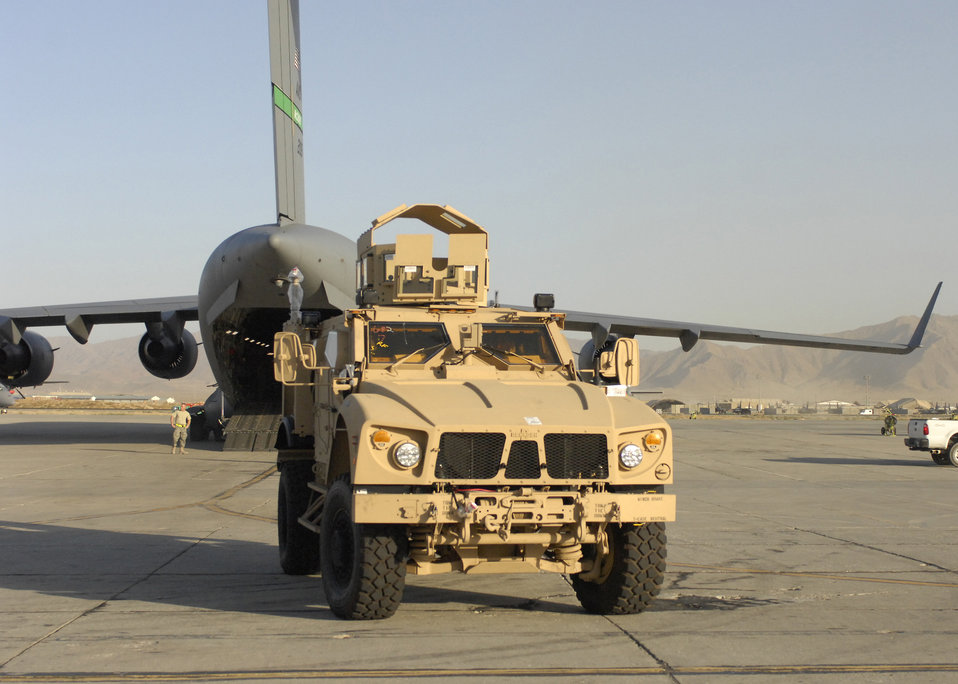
first M-ATVS arrive in Afghanistan

A mine-resistant, ambush-protected all-terrain vehicle sits on the tarmac at Bagram Airfield, Afghanistan, Oct. 1, 2009, after being offloaded from a C-17 Globemaster III less than a day after leaving Charleston Air Force Base, S.C. The M-ATV's are the first of their kind in Afghanistan and support small-unit combat operations in highly restricted rural, mountainous and urban environments that include mounted patrols, reconnaissance, security, convoy protection, communications, command and control, and combat service support. The M-ATV is designed to replace the up-armored Humvee in Afghanistan. The M-ATV will carry up to five personnel.